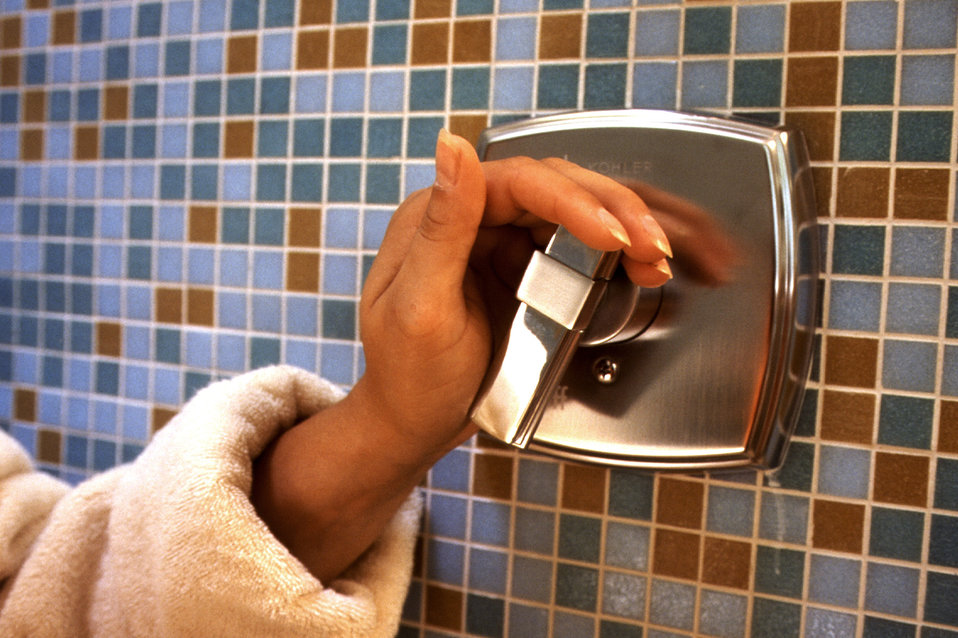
Depicted in this 2000 image was a woman's hand grasping a bathroom shower's mix valve, the lever design of which made it easier to turn by providing more leverage, thereby, requiring less hand strength on the part of the user. Another handle design could be more difficult to turn, especially when the user is mobility-impaired, as in the case of a victim of paralysis, those with limb deformities, or people who are fitted with prosthetic limbs. As is the case with other universally designed concepts, these utilitarian objects are easier to use for all, including those who have no mobility impairments.